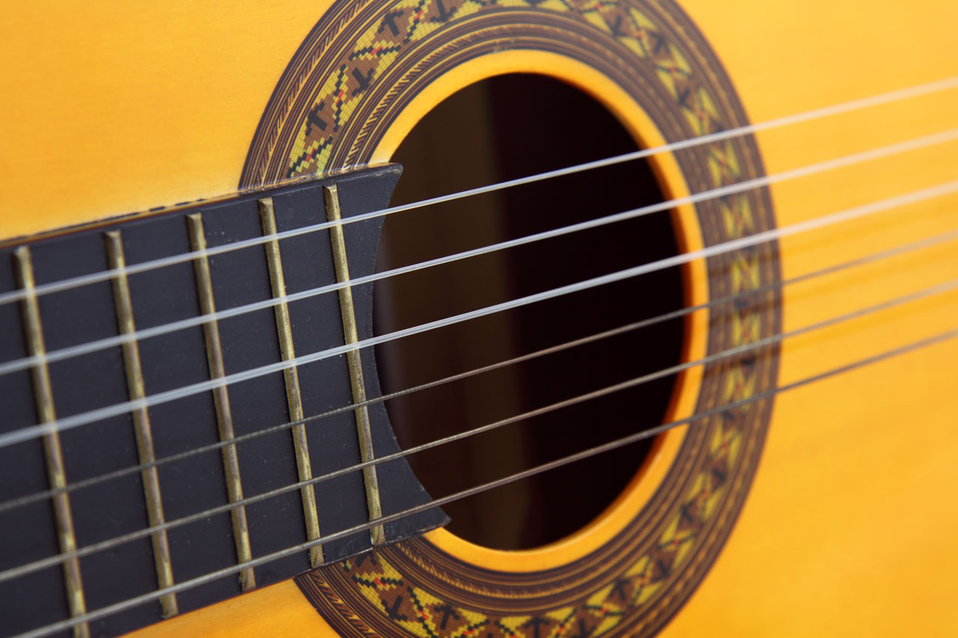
Guitar and strings.